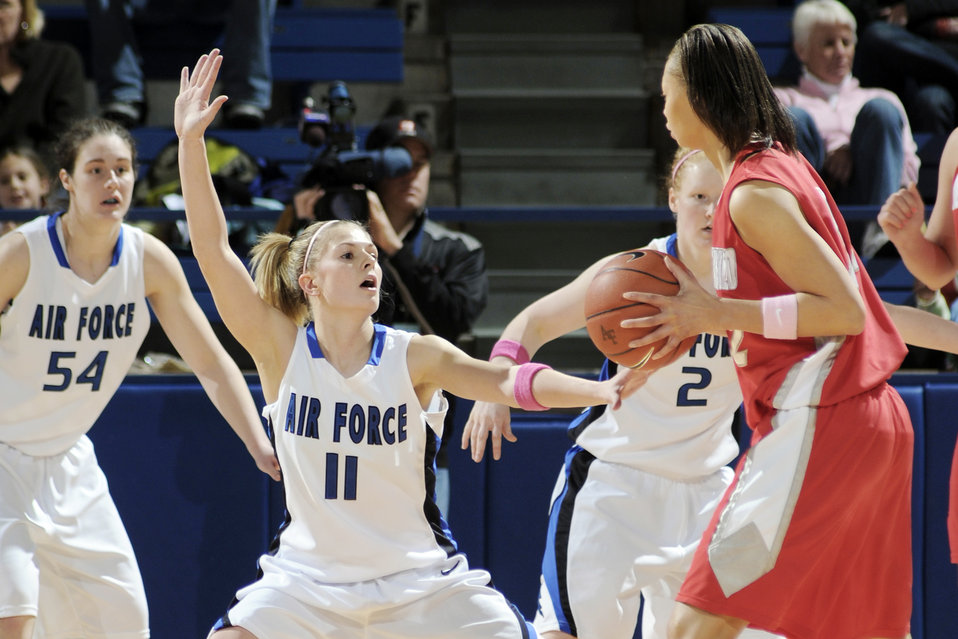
Photo essay: Academy women?s basketball falls to New Mexico

U.S. Air Force Academy sophomore guard Anna Gault puts pressure on the University of New Mexico?s Georonika Jackson during action Feb. 20, 2010, at Clune Arena in Colorado Springs, Colo. The Falcons lost 65-46.